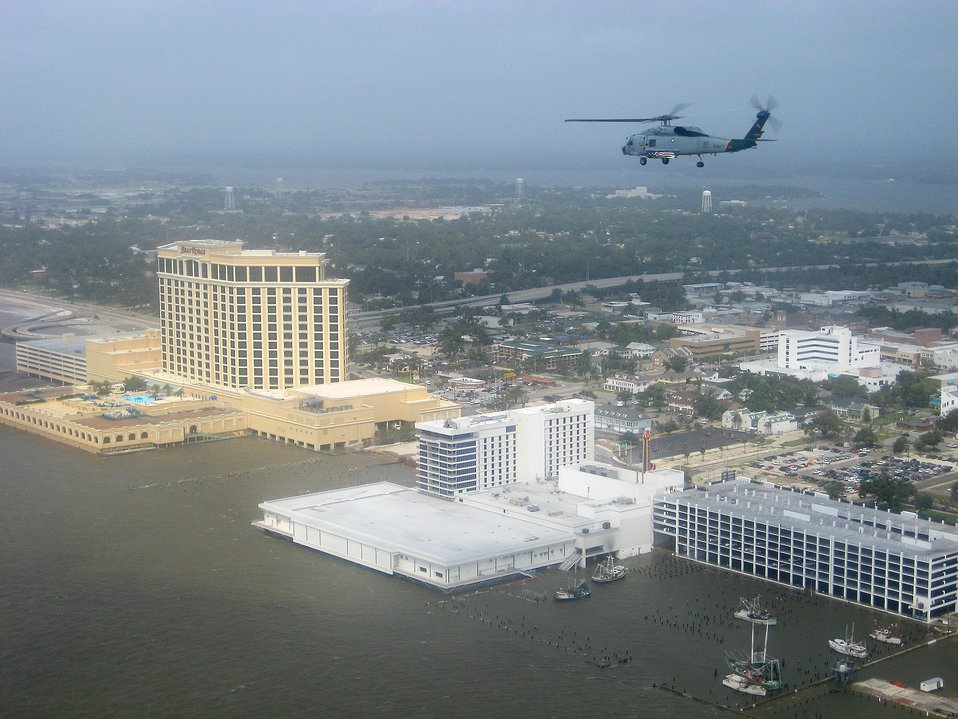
Eye in the sky

Dragonslayer 611, a SH-60F Sea Hawk helicopter, piloted by Cmdr. Mal Sandie (commanding officer HS-11) and Lt. Cmdr. Tim Kinsella survey the Biloxi, Miss., coastline looking for damaged areas caused by Hurricane Ike Sept. 13. The helicopters are from the Helicopter Anti-Submarine Squadron 11, Naval Air Station Jacksonville, Fla.